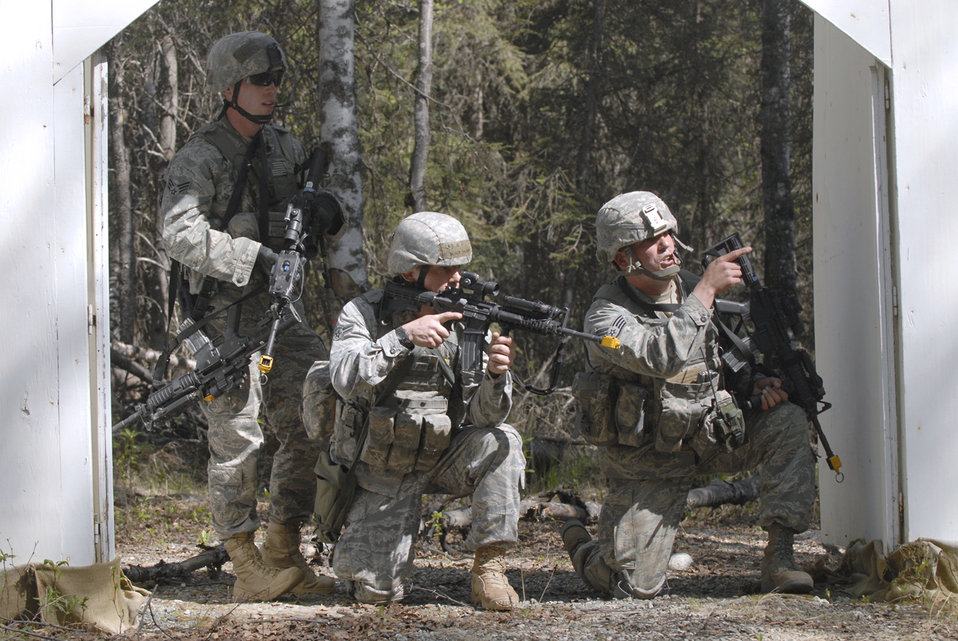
Action under fire

(Left to right) Senior Airman Payton Barnes, Airman 1st Class Stephen Becker and Staff Sgt. John Szewzyk come under simulated fire during a village sweep May 24, 2011, as part of an exercise at Joint Base Elmendorf-Richardson, Alaska. The three Airmen are assigned to the 673rd Security Forces Squadron.